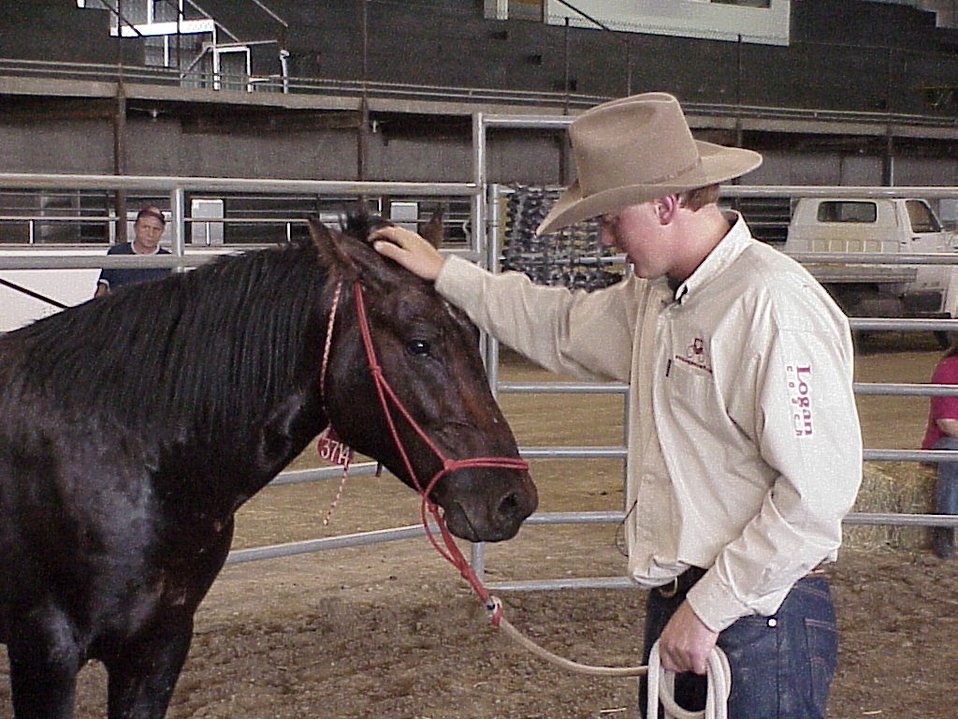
Horse Gentler Mario Johnson Lewiston Wild Horse and Burro Adoption Program Auction WHB indoor auction Cottonwood Field Office UCSC Upper Columbia Salmon Clearwater District